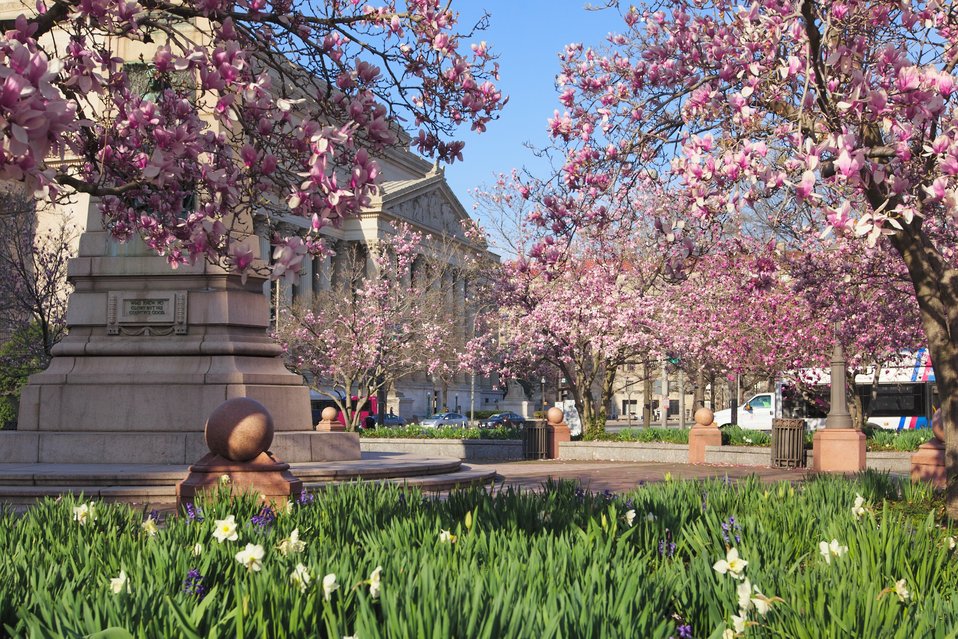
Blooming Magnolias in Indiana Plaza, catty-corner from the National Archives in Washington, DC